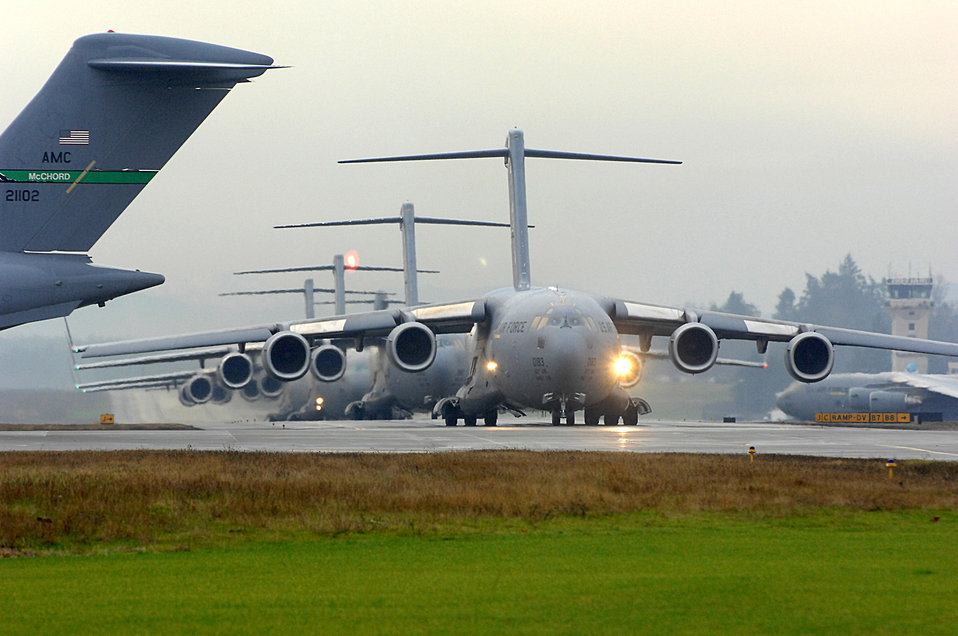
10 Globemaster IIIs fly in formation over Washington state

Six C-17 Globemaster III's prepare to launch as part of a formation training exercise Dec. 20 from McChord Air Force Base, Wash. The exercise consisted of 10 aircraft and was designed to test all the organizations and different aspects of the mission that have to come together to facilitate launching, executing and recovering a large formation of C-17's in a short period of time.